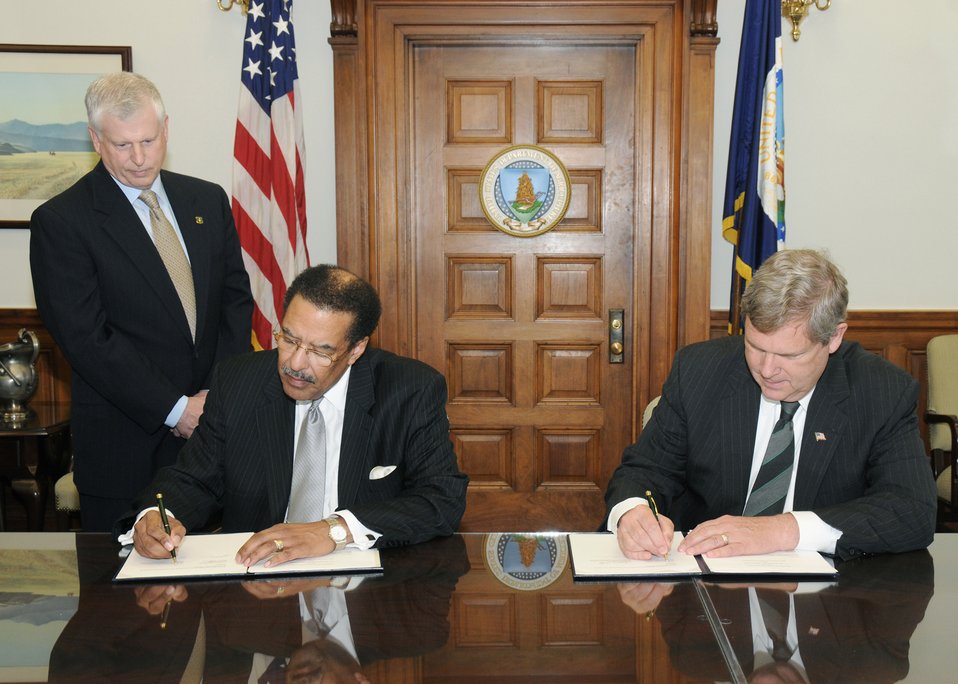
Forest Service Chief and Co-Chair of the 1890’s Task Force Tom Tidwell looks on as President of West Virginia State University and Co-Chair the U.S. Department of Agriculture 1890’s Task Force Dr. Hazo Carter, Jr. and Agriculture Secretary Tom Vilsack sign a Memorandum of Understanding (MOU) between the 1890’s Land Grant Colleges and Universities and the U.S. Department of Agriculture on Wednesday, May 12, 2010. USDA photo 10di1357-08